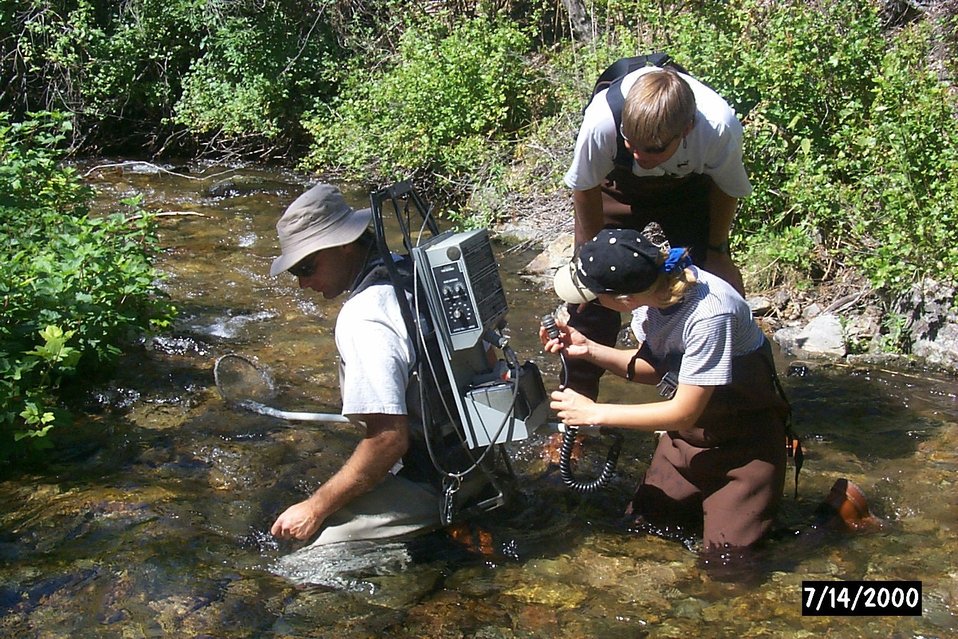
People Salmon Field Office UCSC Upper Columbia Salmon Clearwater District